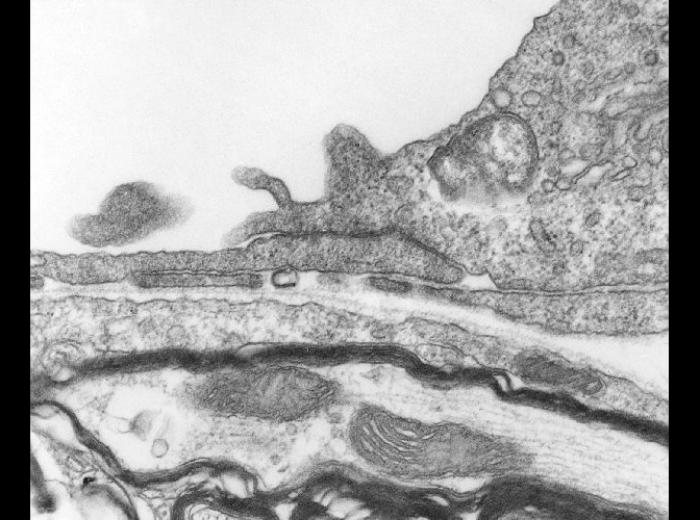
Single Rickettsia tsutsugamushi free within the cytoplasm of a mouse brain capillary endothelial cell.